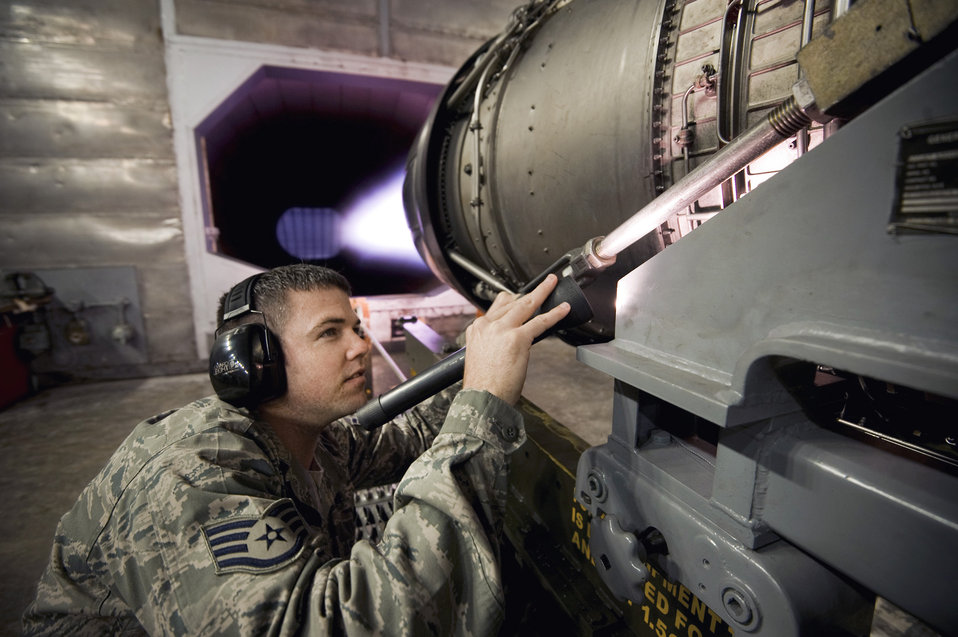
Test cell Airmen prep F-16 engines for flight

Staff Sgt. Chris Browne inspects the engine from an F-16 Fighting Falcon in the hush house May 27, 2010, at Misawa Air Base, Japan. The hush house allows maintainers to test and inspect the jet engines before returning them to the flightline. Sergeant Browne is a 35th Maintenance Squadron aerospace propulsion test cell technician.